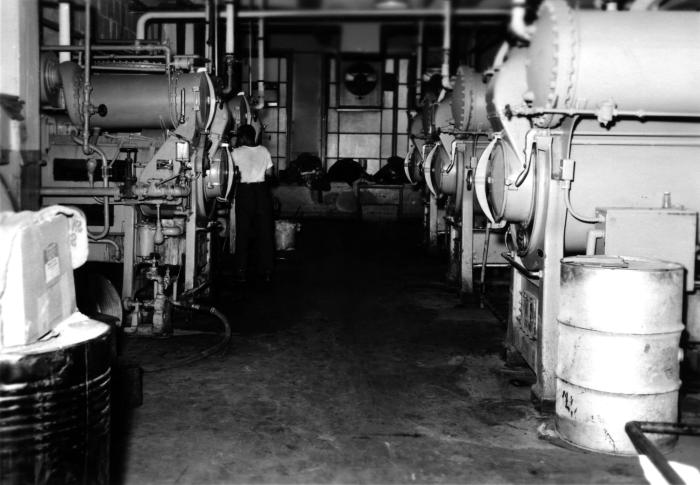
This 1950 historical photograph was provided by the Center for Disease Control's (CDC), National Institute for Occupational Safety and Health (NIOSH), and depicted a worker loading a 'Zoric�' machine in a dry cleaning establishment. In the 1950s, the Industrial Hygiene Division (IHD) investigated hazards in dry cleaning environments. New non-flammable cleaners had recently been introduced, which created concerns about their toxicity.As of 2005, there were approximately 36,000 dry cleaning businesses in the U.S., most employing less than ten people. The focus today is on the perchloroethylene (tetrachloroethylene of 'Perc'), used as a solvent in 85% of dry cleaning shops. It is carcinogenic in animals, and suspected to be so in humans.